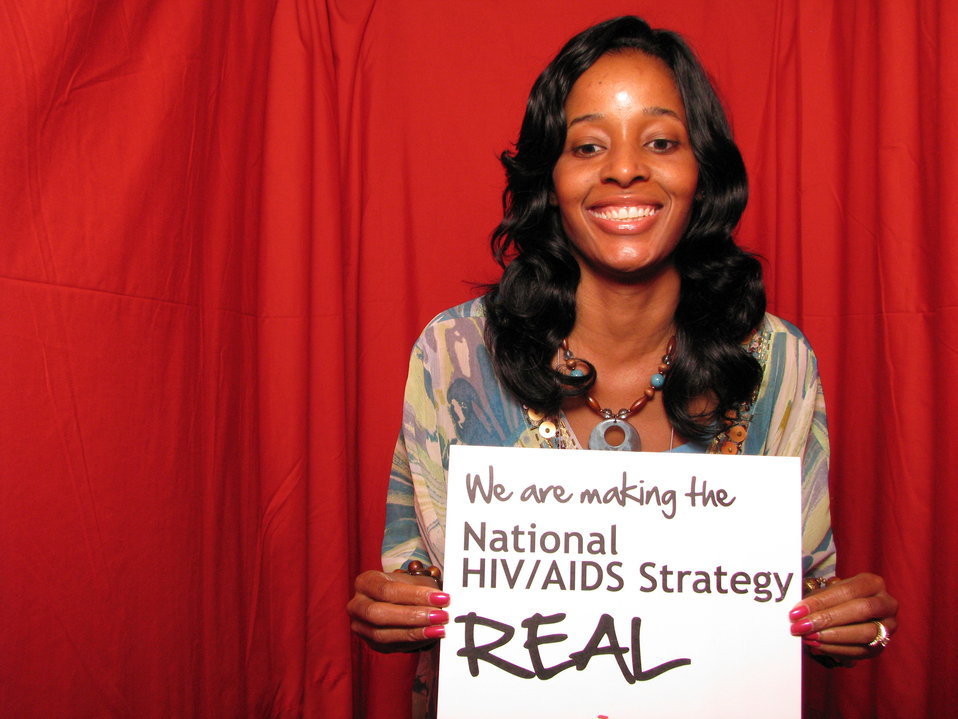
We are making the National HIV/AIDS Strategy REAL

From the AIDS.gov photo booth at the U.S. Conference on AIDS, September 2010 (Orlando, FL).